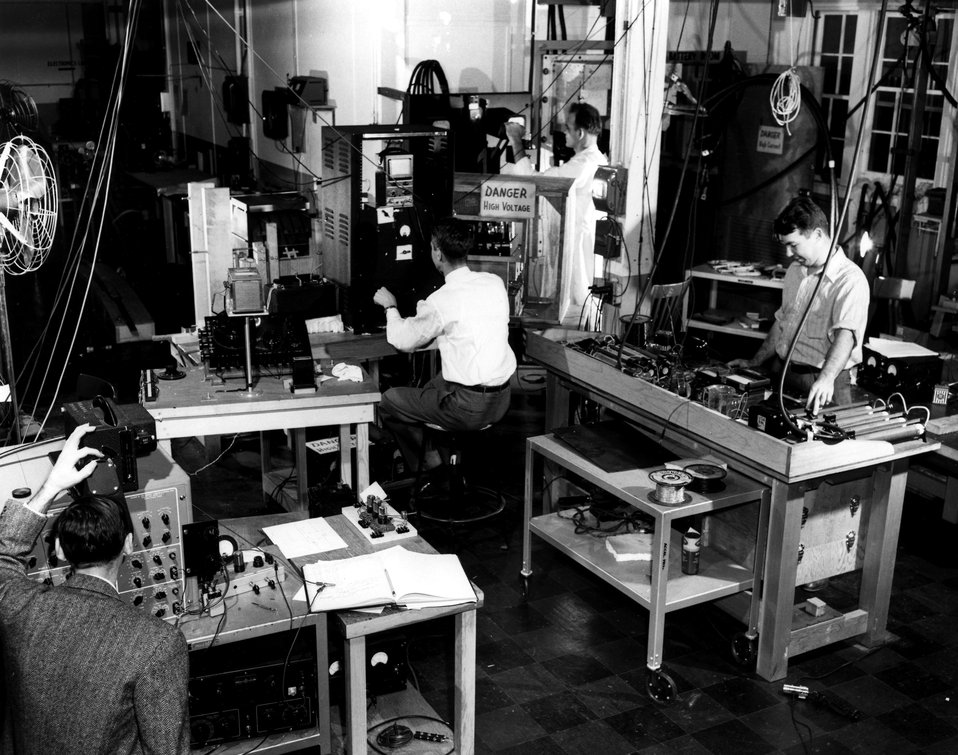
Magnet test laboratory in Building T-194.
Personnel reading from left to right are
G.K. Green, R. Meyer, F. Janik and L. Redmond.